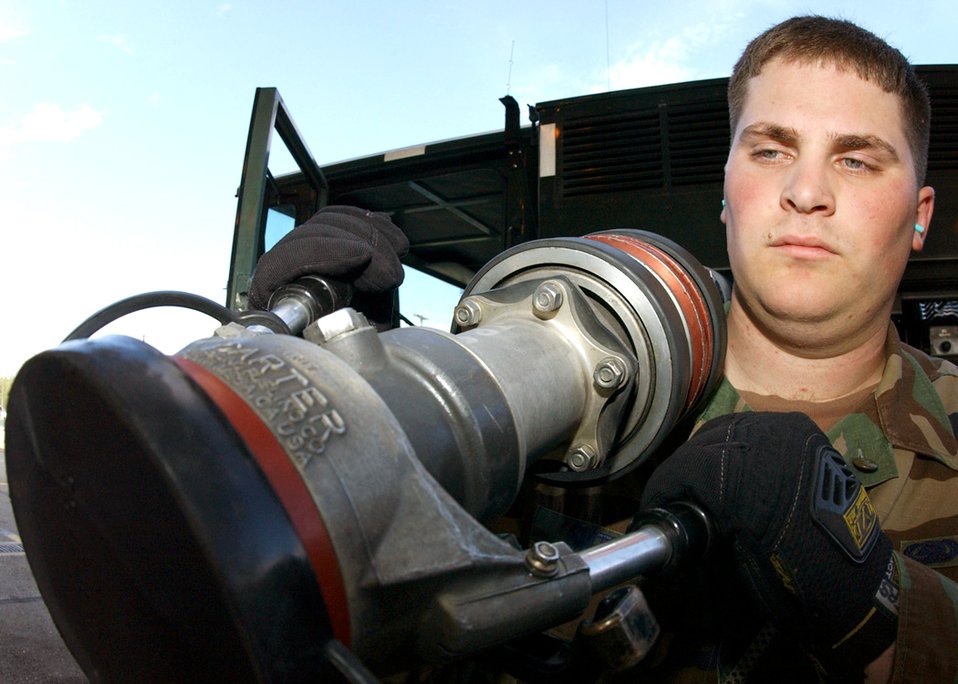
Earth friendly Falcon fill up

EIELSON AIR FORCE BASE, Alaska -- Senior Airman Trevor Smith prepares to refuel an F-16 Fighting Falcon here July 6 using checklists and techniques that are part of the environmental management system. Refueling aircraft on the flightline is considered an aspect of environmental awareness because of the potential effect even the smallest fuel spill could have on soil, groundwater or surface water. Airmen Smith is assigned to the 354th Logistics Readiness Squadron.